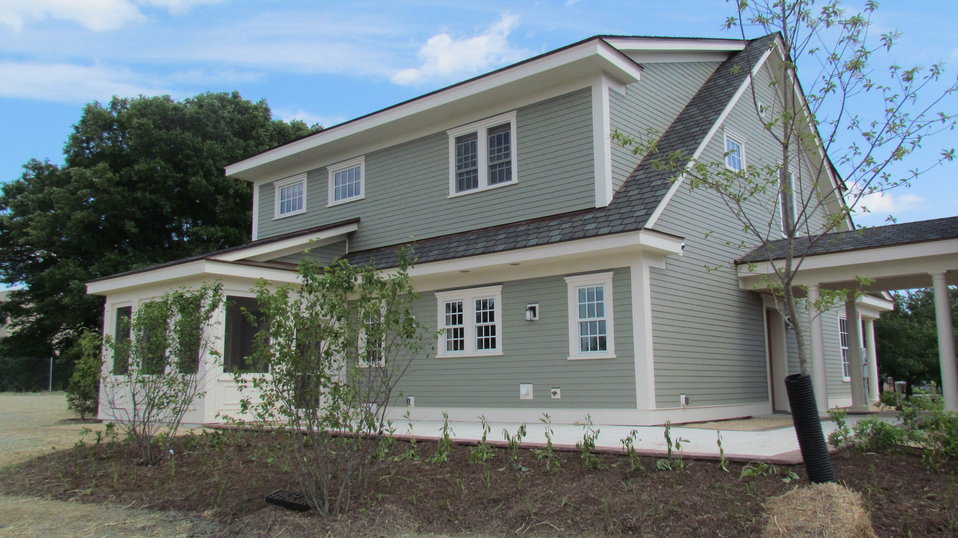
North (rear) side of completed NZERTF with landscaping in place.